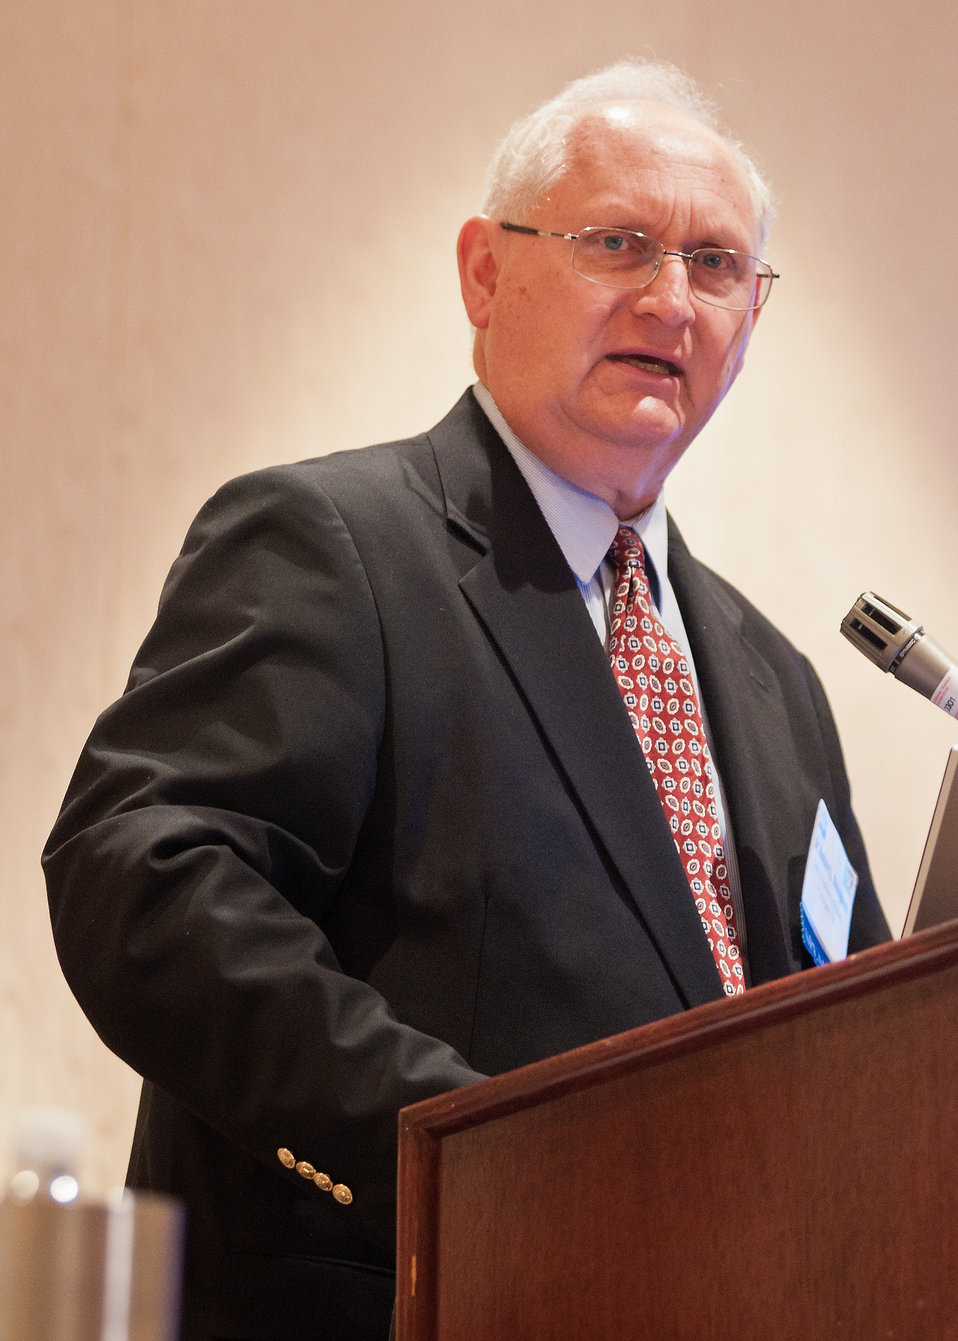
Robert Thompson, Visiting Scholar, The Paul H. Nitze School of Advanced International Studies, Johns Hopkins University, Washington, D.C., spoke at the Global Food Security afternoon breakout session at the 2012 Agricultural Outlook Forum, “Moving Agriculture Forward, Growing, Innovating and Celebrating 150 Years” held at the Crystal gateway Marriott Hotel Arlington, Virginia, Friday, February 24, 2012. The session discussed and reviewed challenges associated with feeding a growing world population with a currently strained resource base.